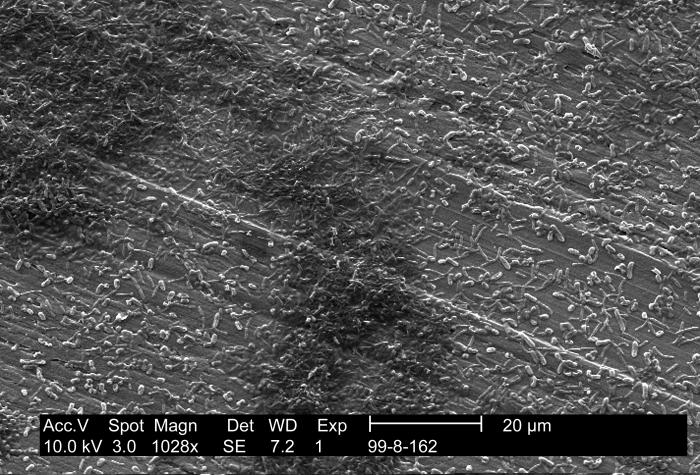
This scanning electron micrograph (SEM) depicts findings uncovered during Legionella pneumophila research, which investigated the association of amoebae when present with L. pneumophila bacteria existing on potable water biofilms; Mag. 1028x. Shown here are L. pneumophila as well as other unidentified bacteria.